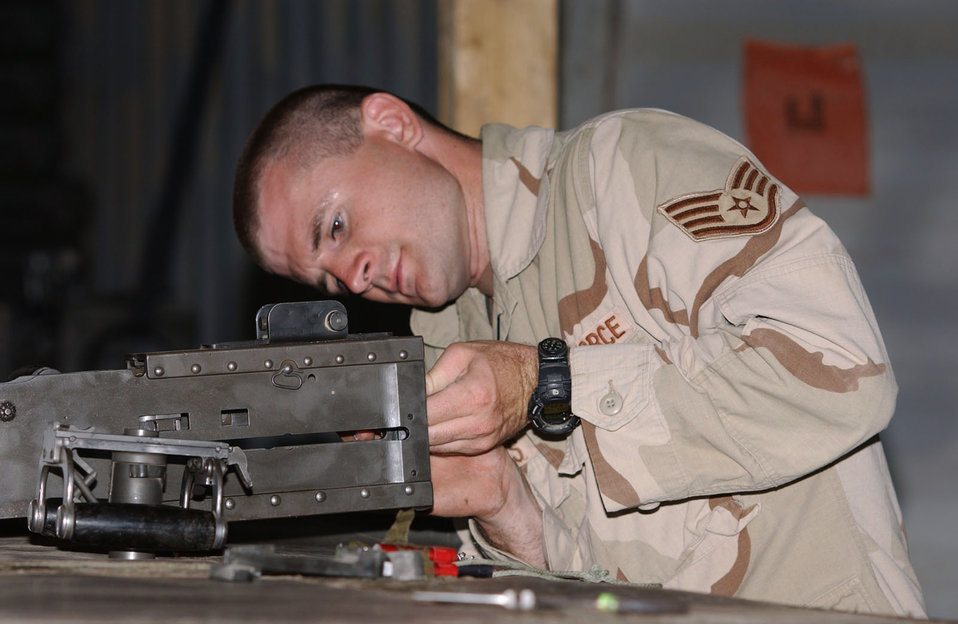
Convoy Airmen protect supply lines in Iraq

BALAD AIR BASE, Iraq -- Staff Sgt. Ivan Ochoa finishes mounting a .50-caliber machine gun and completes his final inspections before a convoy. His unit provides convoy protection to civilian contractors and Army units delivering supplies throughout the area of responsibility. He is a assigned to the 732nd Expeditionary Mission Support Group's Detachment 2632.